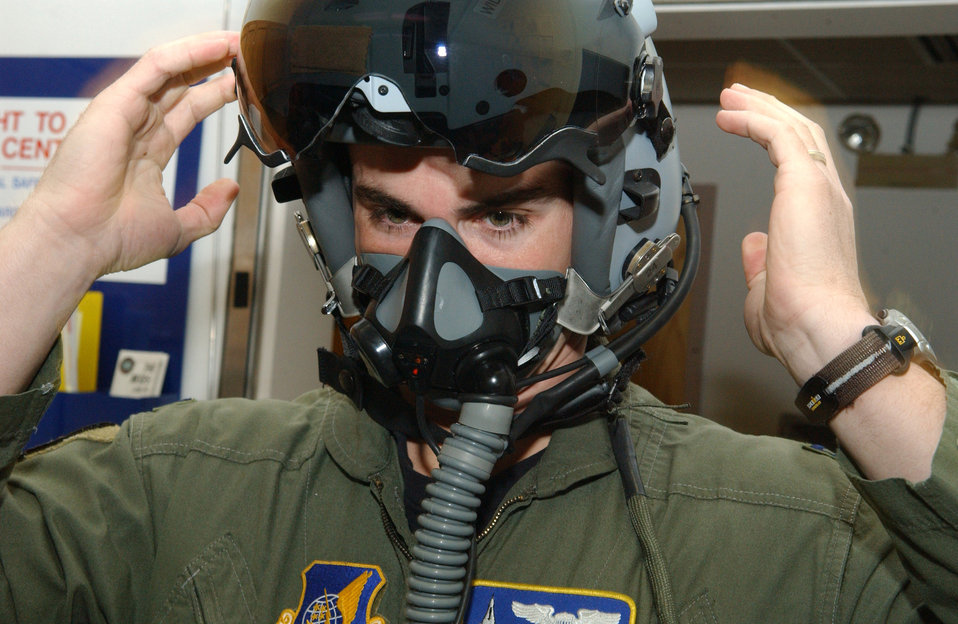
New helmet gives pilots the edge

Capt. Jeremey Wimer tries on a newly issued fighter helmet while gearing up Feb. 21 at the 18th Fighter Squadron at Eielson Air Force Base, Alaska. The new helmet mounted queing system has targeting technology that projects holographic data on the inside right of the visor in the form of a container, or que and allows pilots to continually survey and distinguish between friendly and enemy air and ground targets. Captain Wimer is an F-16 Fighting Falcon pilot.